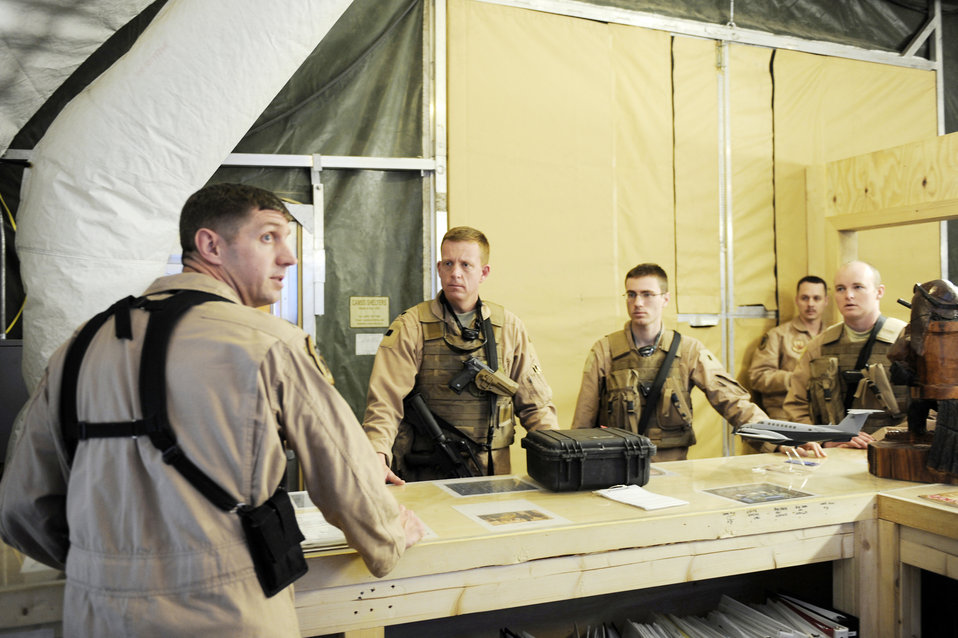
Liberty Airmen watch over Afghan

Lt. Col. Rob Weaver, director of operations for the 4th Expeditionary Reconnaissance Squadron and an MC-12 Liberty pilot at Bagram Airfield, Afghanistan, briefs a departing MC-12 aircrew Feb. 27, 2010, prior to a mission. The four-person MC-12 aircrews fly the modified King Air 350 commercial plane to provide real-time full-motion video and signals information to help military leaders make battlefield decisions.